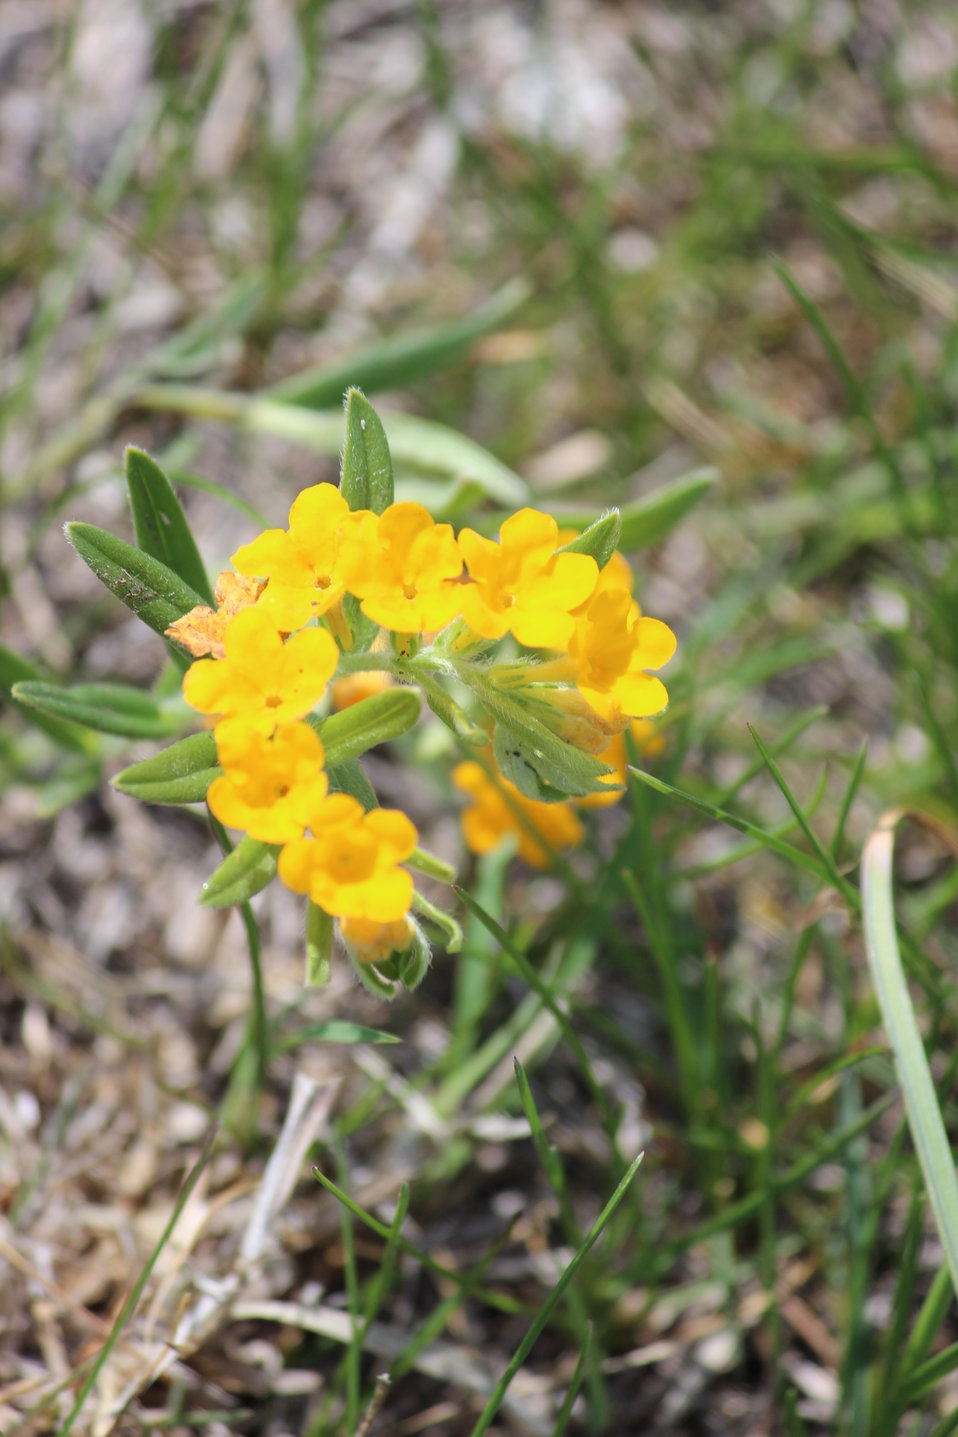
Hoary Puccoon

This perennial native wildflower is found blooming in high-quality native prairies during April and May. Each flower produces four nutlets (seeds). This flower was used to make dye by Native Americans.